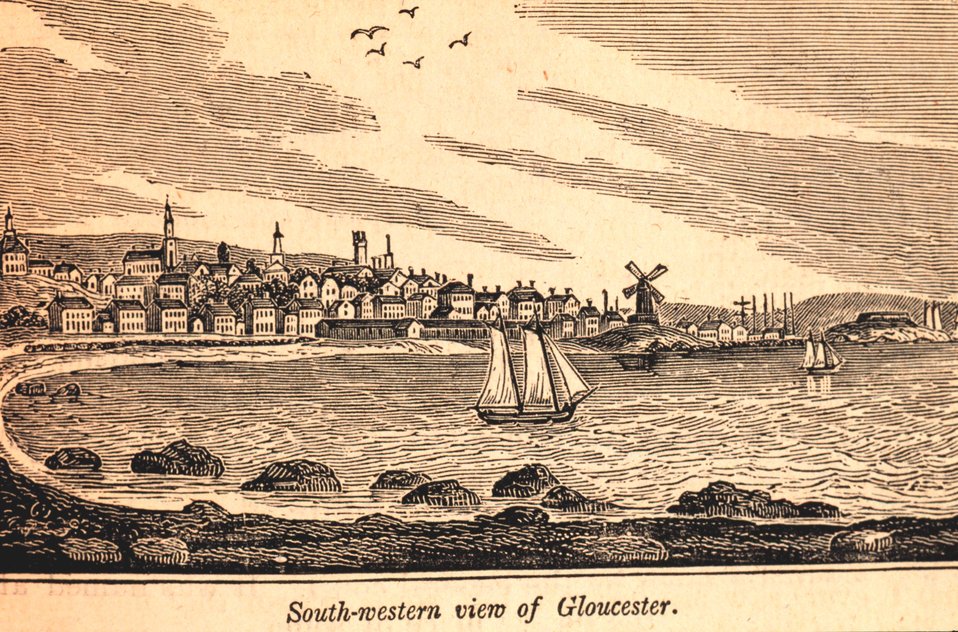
Gloucester as seen from the southwest. In: Historical Collections ... of Every Town in Massachusetts. 1841.